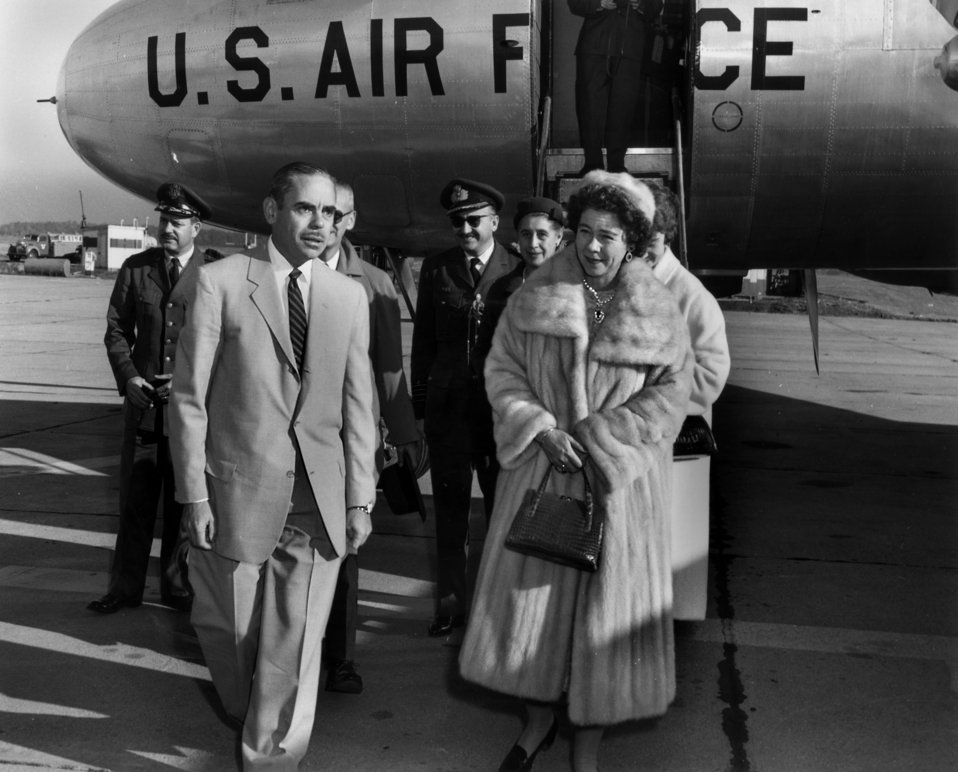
Queen Frederika - Queen consort of the Hellenes arrival at Knoxville's McGhee Tyson Airport

58-0999b DOE photo by Ed Westcott

Queen Frederika - Queen consort of the Hellenes arrival at Knoxville's McGhee Tyson Airport 11-7-1958